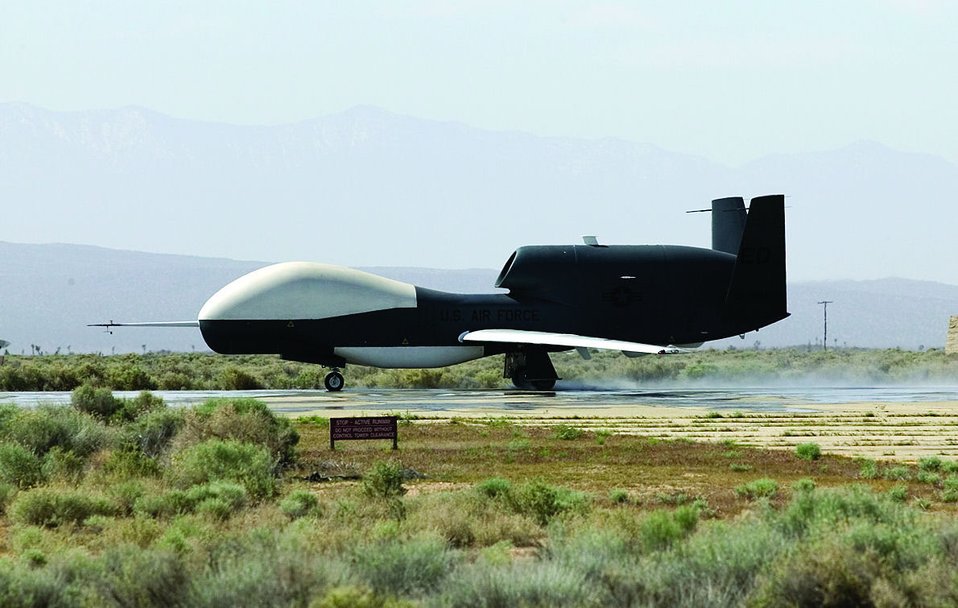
Global Hawk wet runway testing

A Global Hawk unmanned aircraft system performs a high-speed taxi test at Edwards Air Force Base, Calif., during Phase III of wet runway testing May 3, 2006. This is the first time wet runway tests have been conducted with a UAS.